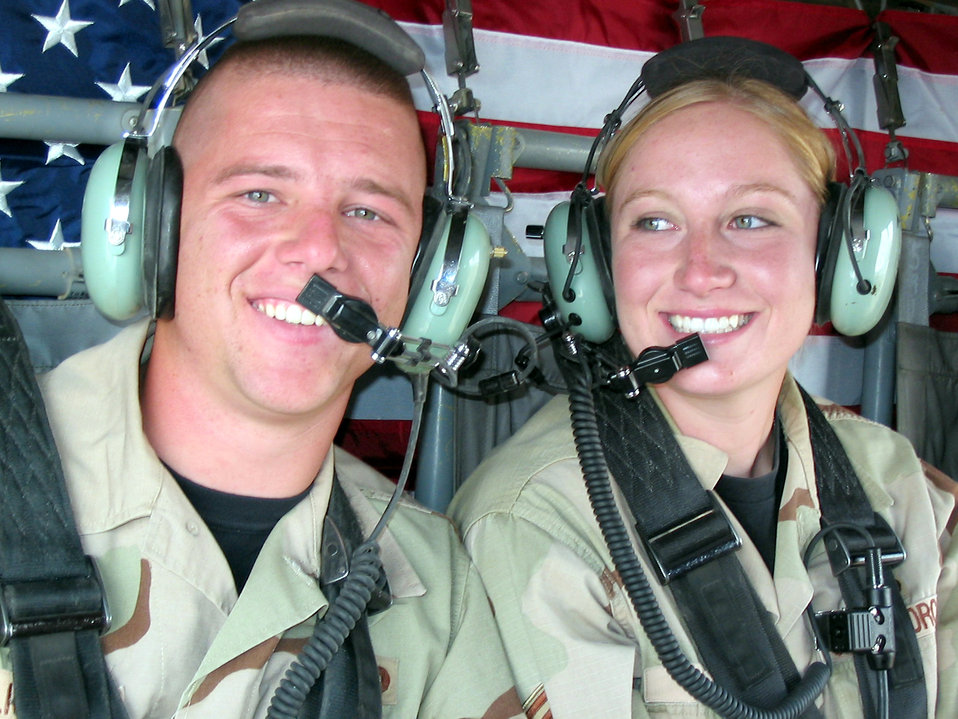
I do

BALAD SOUTHEAST AIRFIELD, Iraq -- Airmen First Class Vernon Millican and Toni Chapman are all smiles as they get ready to take their wedding vows on board a UH-60 Black Hawk helicopter Nov. 6. Both are deployed here from the 5th Security Forces Squadron at Minot Air Force Base, N.D.